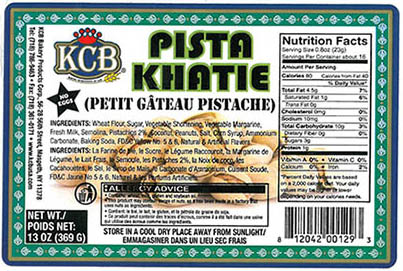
RECALLED – Pista Khatie (cookies)

October 21, 2013 – Product Recall – Kashmir Crown Baking LLC Issues Allergy Alert on Undeclared Eggs on KCB Pista Khatie.